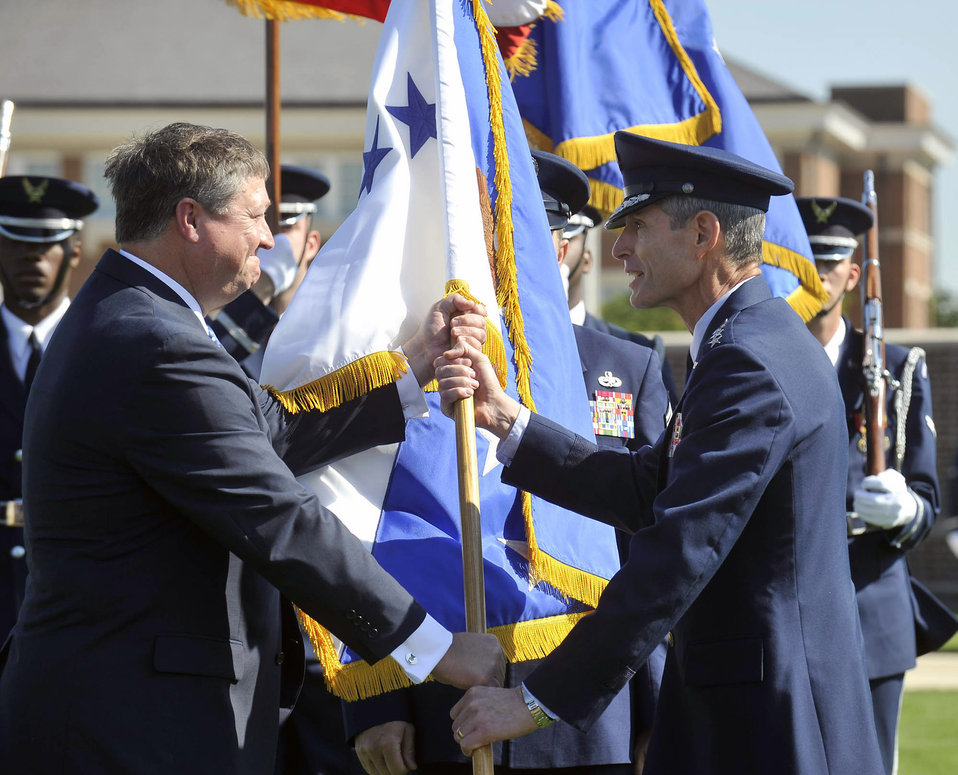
Passing the flag

Gen. Norton A. Schwartz accepts the Air Force flag as the new Air Force chief of staff from Acting Secretary of the Air Force Michael B. Donley during a welcoming ceremony Aug. 12 on Bolling Air Force Base, D.C. General Schwartz is the 19th Air Force chief of staff.